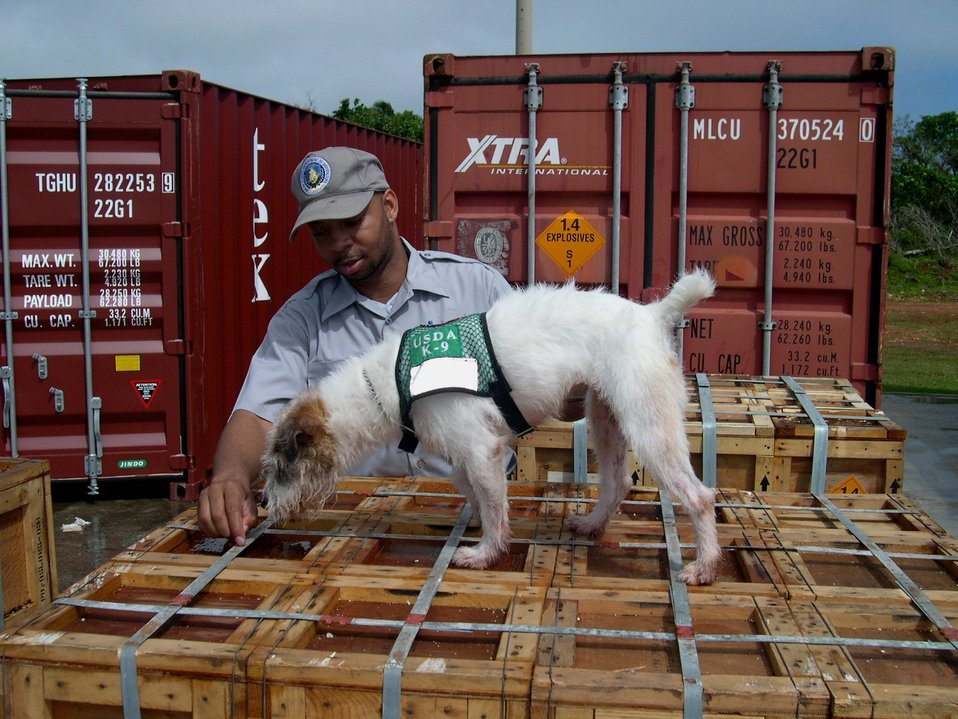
The U.S. Department of Agriculture's (USDA) Animal Plant Health and Inspection Service (APHIS) Wildlife Services (WS) field specialists trap invasive brown treesnakes, using trained snake-detector dogs to find snakes in cargo, conduct nighttime spotlight searches, and promote public education. Since 1993, they have removed more than 150,000 brown treesnakes from Guam’s ports, including outbound cargo, planes and ships. This is in addition to the thousands of snakes removed every year through toxicant baiting efforts across the island.